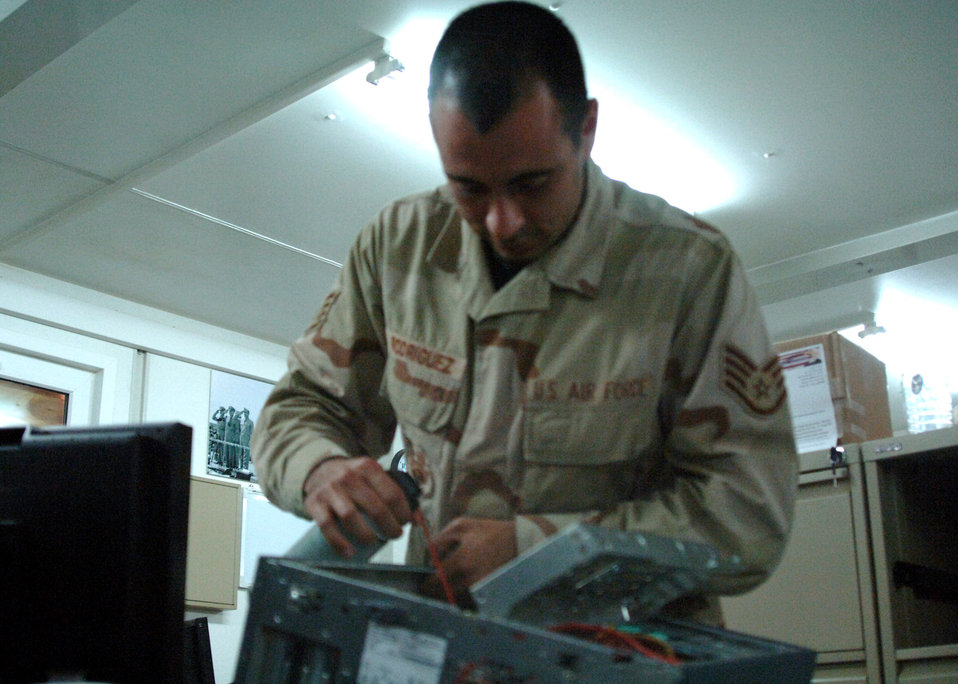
Communications Airmen make the connection

Staff Sgt. Mark Rodriguez cleans and troubleshoots computer equipment at Al Asad Air Base, Iraq. He deployed from the 71st Communications Squadron at Vance Air Force Base, Okla., and is assigned to the 438th Air Expeditionary Group. Sergeant Rodriguez is a computer systems specialist.